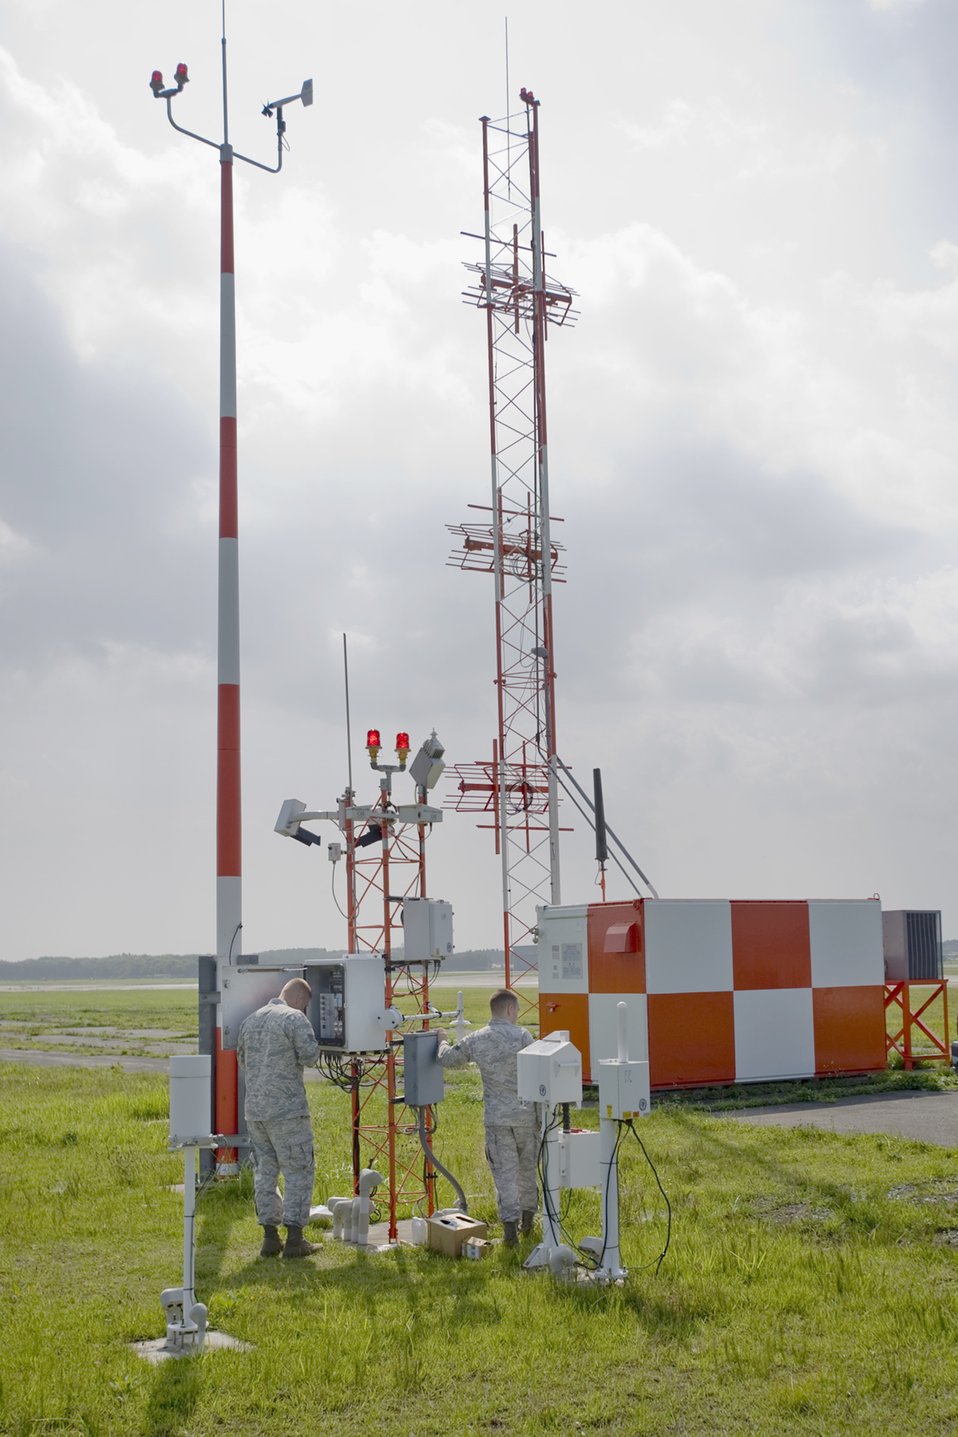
Maintaining an automatic observation system

Staff Sgt. James McGrath (left) and Senior Airman Kevin Finstuen conduct maintenance on an automatic observation system on the flightline Aug. 17, 2010, at Misawa Air Base, Japan. Sergeant McGrath and Airman Finstuen are airfield systems maintenance technicians with the 35th Communications Squadron.